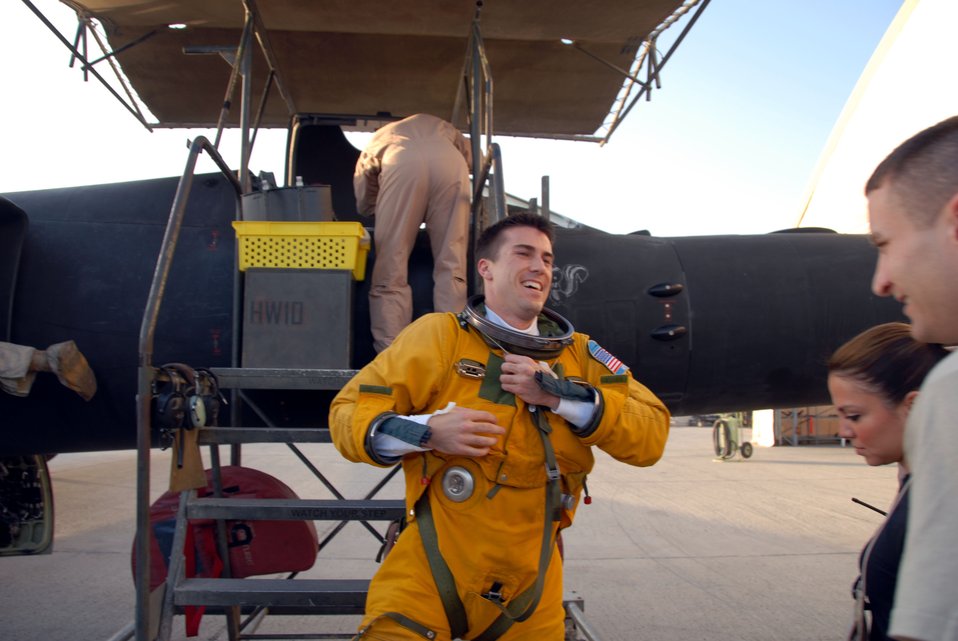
March 10 airpower: ISR missions critical in war on terrorism

U-2 pilot Capt. Justin Gittins exits the Dragonlady following his first combat sortie, a 10-hour flight. Well-trained pilots like Captain Gittins frequently fly aging aircraft, including the U-2, in operations Iraqi Freedom and Enduring Freedom to deliver the intelligence, surveillance and reconnaissance needed by commanders at all levels. Captain Gittins is assigned to the 99th Expeditionary Reconnaissance Squadron.